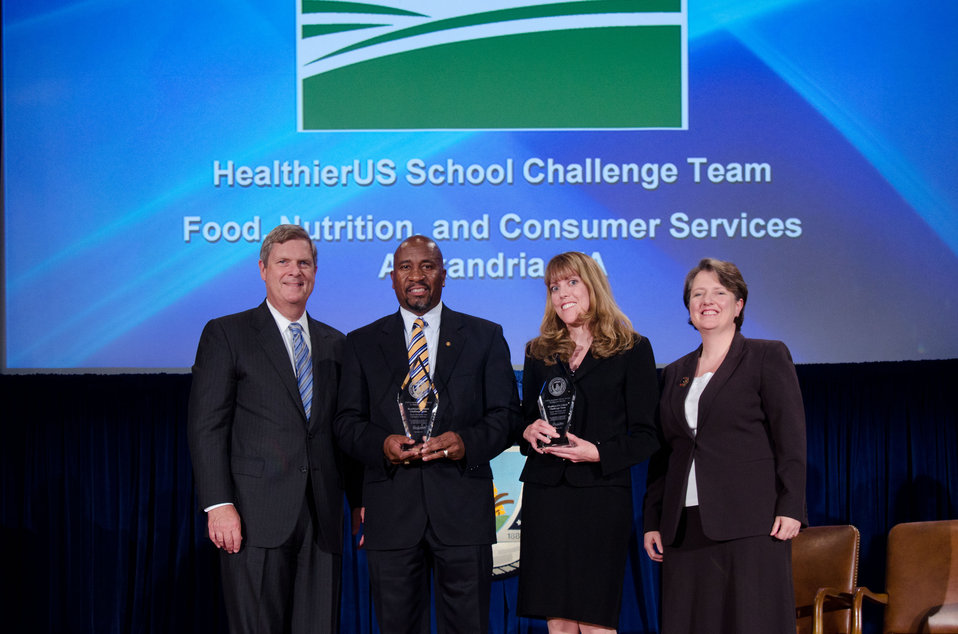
Agriculture Secretary Tom Vilsack (l) and Deputy Secretary Kathleen Merrigan (r), presents the
Ensuring That All Of America’s Children Have Access To Safe, Nutritious and Balanced Meals
Award to HealthierUS School Challenge Team, Food, Nutrition, and Consumer Services, Alexandria, VA. Bruce Alexander & Cynthia Ann Long, Group Leaders. For Excellence in training, technical assistance, and promotion to double the number of HealthierUS School Challenge certified schools in support of Let’s Move! campaign to end childhood obesity. On Wednesday, September 14, 2011 in the Jefferson Auditorium at the US Department of Agriculture in Washington, DC.